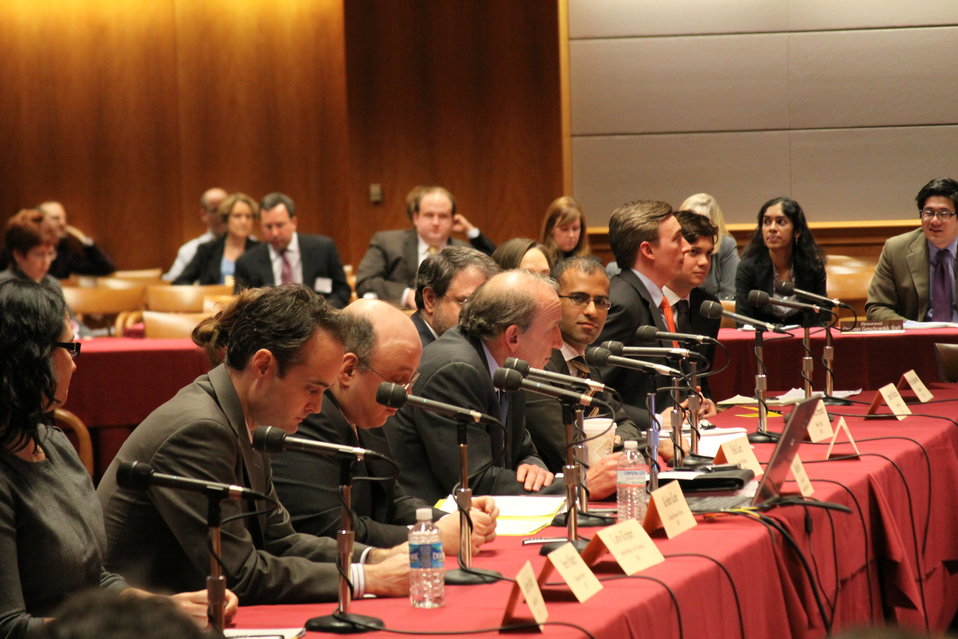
Open Commission Meeting - 2/18/2010

The Federal Communications Commission will hold an Open Meeting in Washington, DC. on February 18, 2010, which will include the following items:

E-Rate: An Order and Notice of Proposed Rulemaking to enable schools that receive funding from the E-Rate program to allow members of the general public to use the schools' Internet access during non-operating hours at no additional cost to the Universal Service Fund. This order and notice do not permit or require any changes to E-Rate applications due on February 11, 2010; Ex Parte Reform: A Notice of Proposed Rulemaking to improve the transparency and effectiveness of the FCC's decision-making process by reforming the ex parte rules; Procedural Reform: A Notice of Proposed Rulemaking to enhance the efficiency, openness, and transparency of the Commission's proceedings by improving and modernizing certain organizational and procedural rules; National Broadband Plan Status Report: Commission staff will report on the status of the National Broadband Plan, providing a framework for the national purposes portion of the Plan.